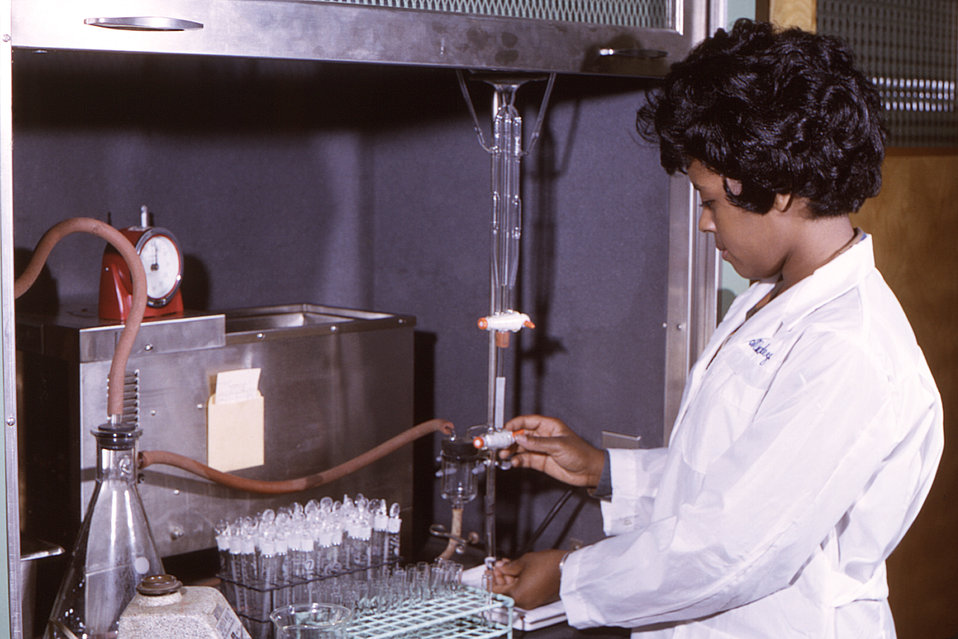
This historic 1965 photograph depicted a laboratory technician as she was measuring a filtrate using a Seligson pipette. She would subsequently implement the orthotolidine method upon these measured samples.